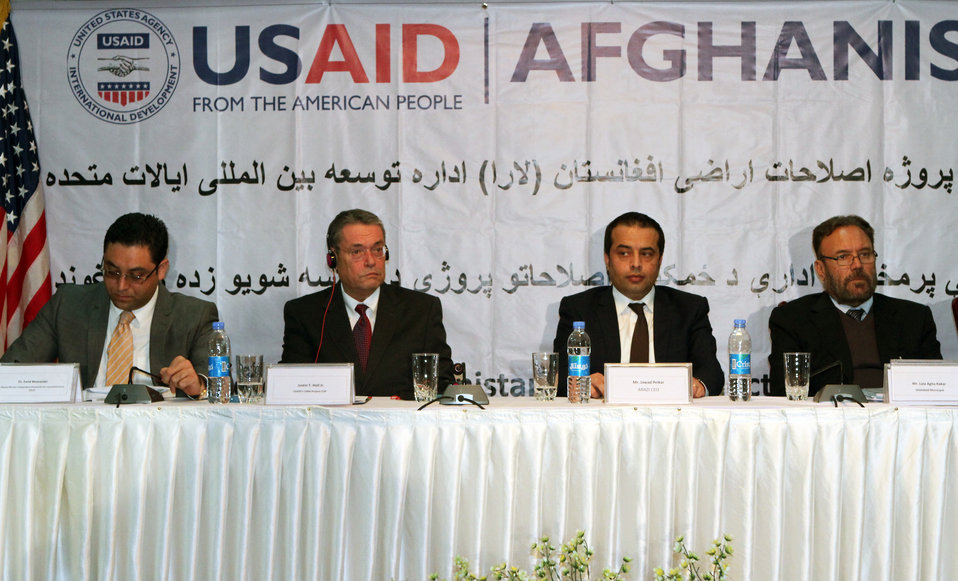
USAID Land Reform Project